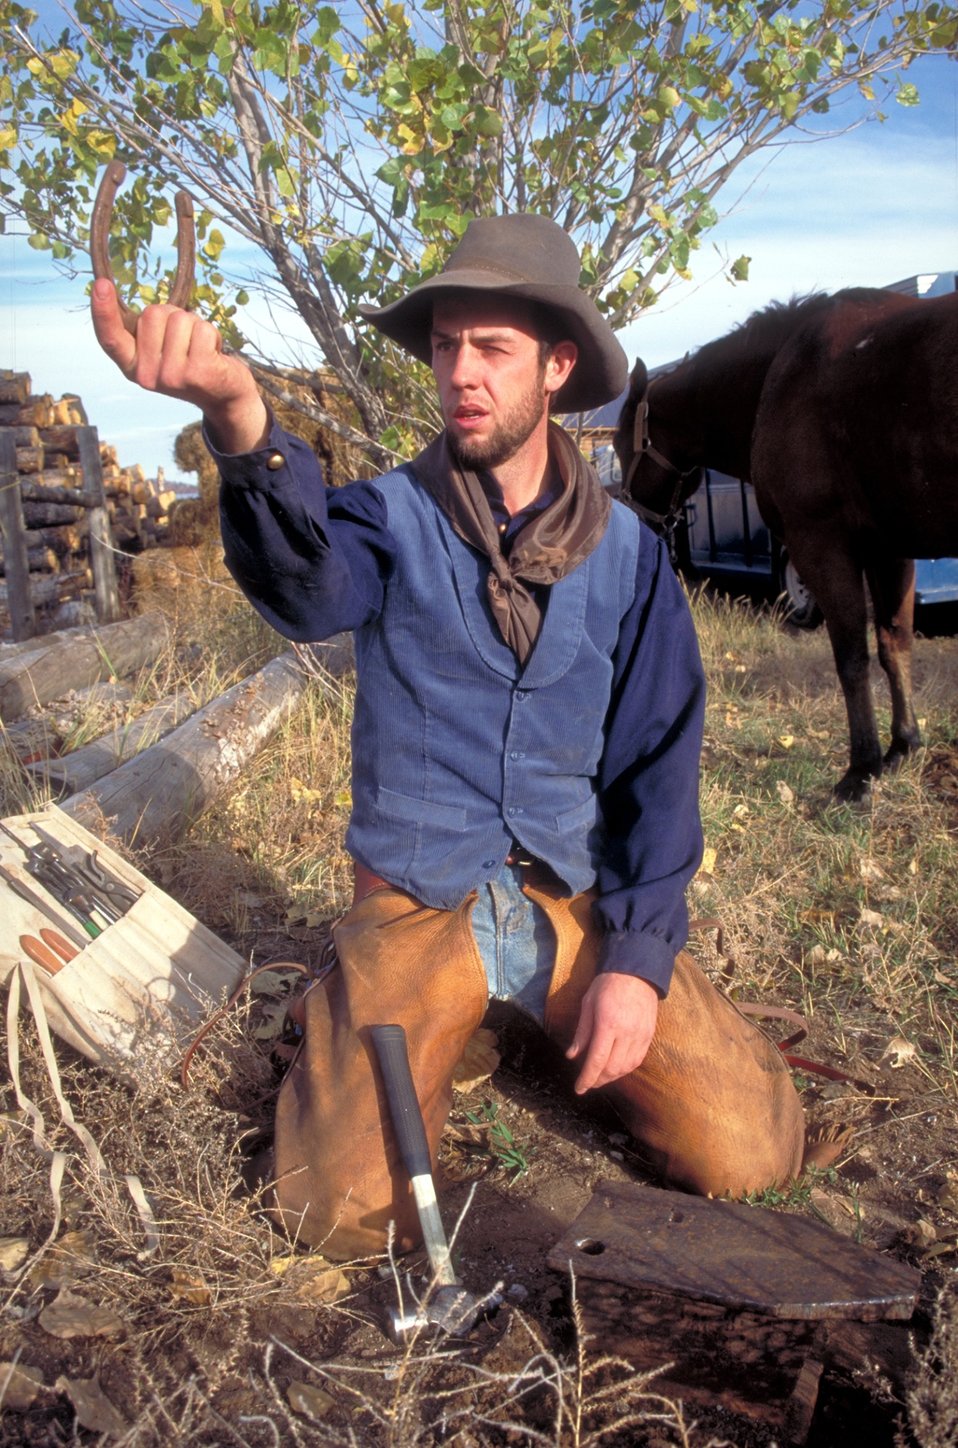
Working cowboys living near Vernal, Utah.